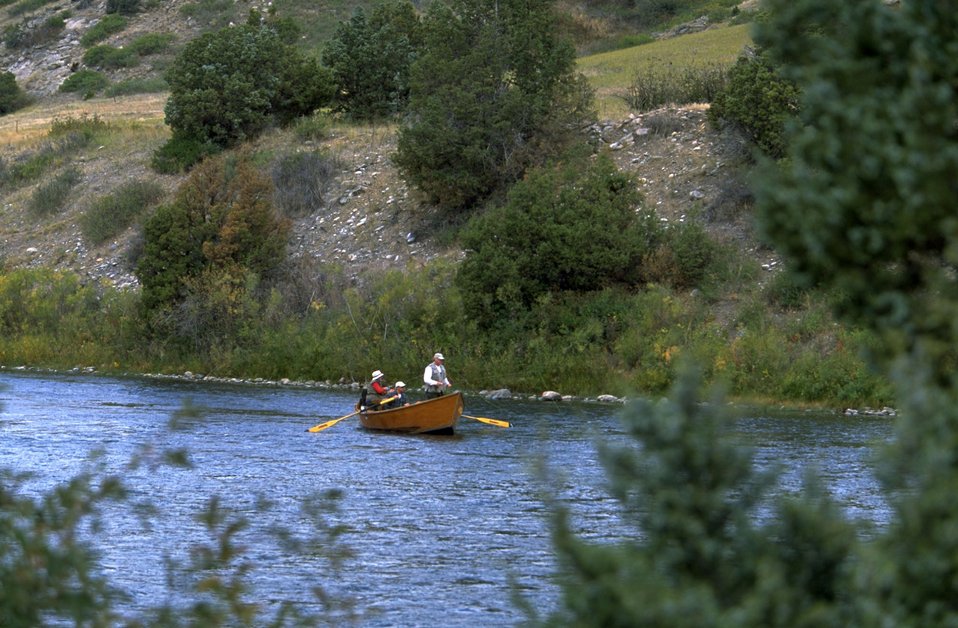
Float Fishing on the Madison River